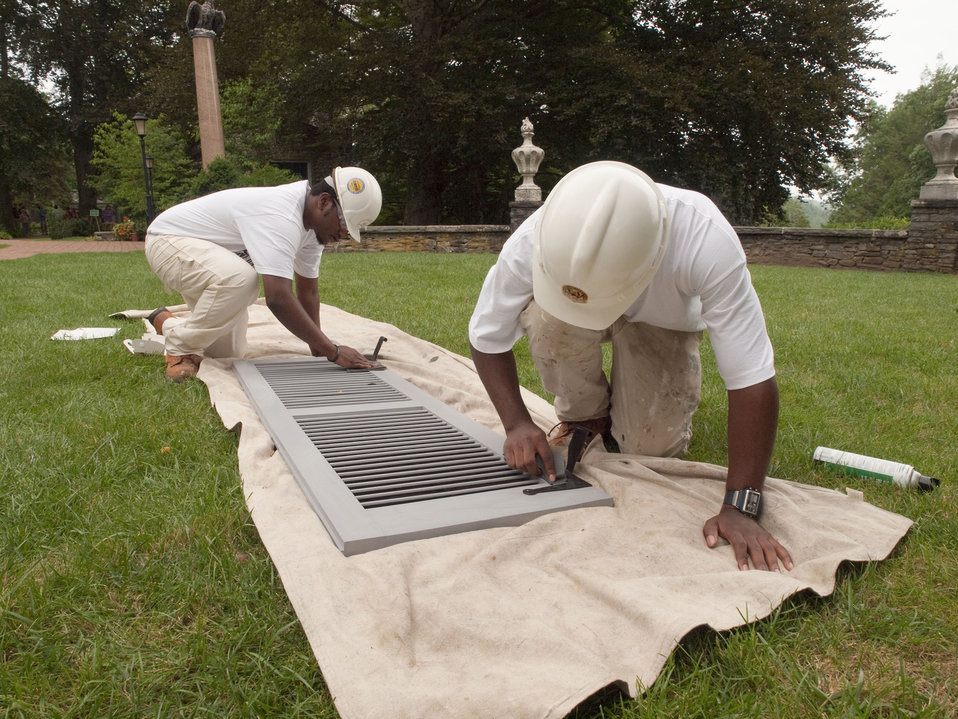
Job Corps students help to restore Grey Towers National Historic Site. $2,440,000 in Recovery Act funds were allocated to repair and refurbish the house and grounds of the ancestral home of the first Chief of the Forest Service and two-term Pennsylvania governor Gifford Pinchot on Tuesday August 3, 2010 in Milford, PA. This project at the 123-year-old site repairs various deficiencies with the buildings and grounds, restores areas of the historic landscape, improves visitor safety and site security, provides a more sustainable facility, and enhances the visitor experience. It helps to ensure the historic site is maintained for years to come.